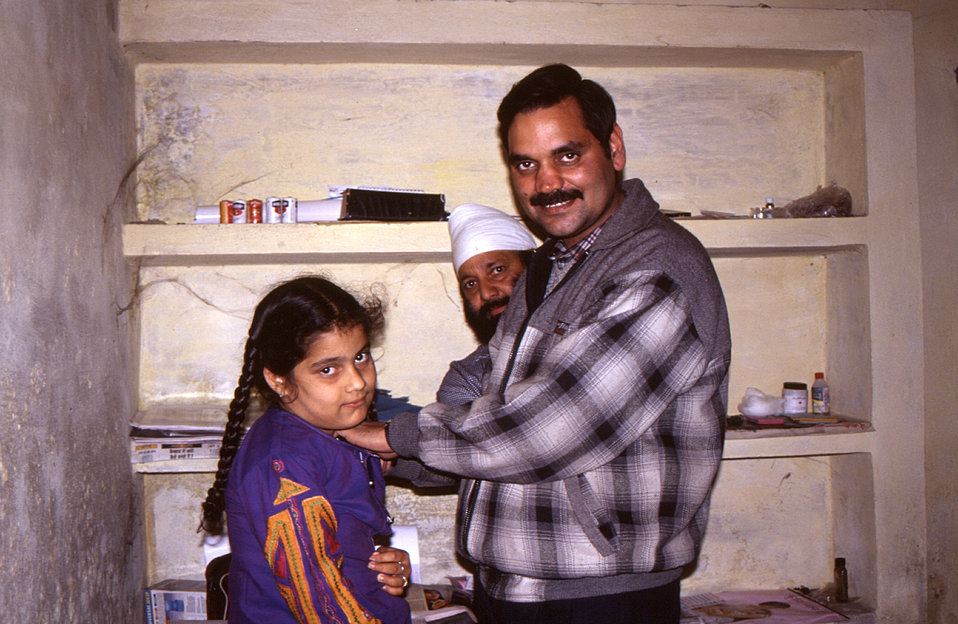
This 2000 photograph depicted Surveillance Medical Officer, Dr. Bhatti, as he was performing a physical follow-up exam to a young Indian girl who had been suspected of suffering from a case of acute flaccid paralysis (AFP); however, she was eventually diagnosed with Guillain-Barre Syndrome, not polio.The image was provided by Chris Zahniser, B.S.N., R.N., M.P.H., a STOP Transmission of Polio (STOP) immunization initiative team member and photographer. Ms. Zahniser was at the time assigned to the state of Uttar Pradesh in northern India, and spent three months working in the Districts of Gorakhpur and Deoria.